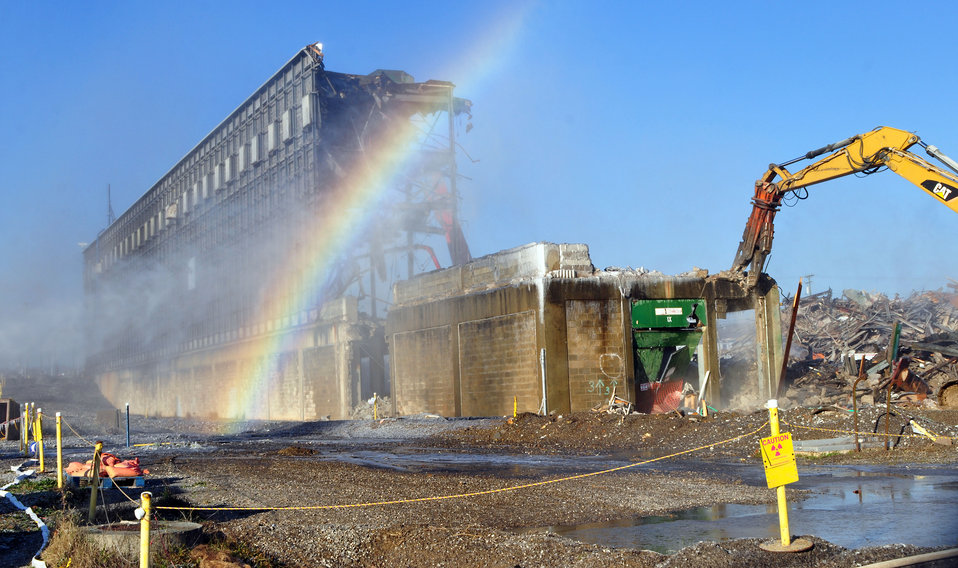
K-25 Demo Oak Ridge 2013

13-152-65 DOE photo Lynn Freeny 12-12-2013 Oak Ridge Tennessee